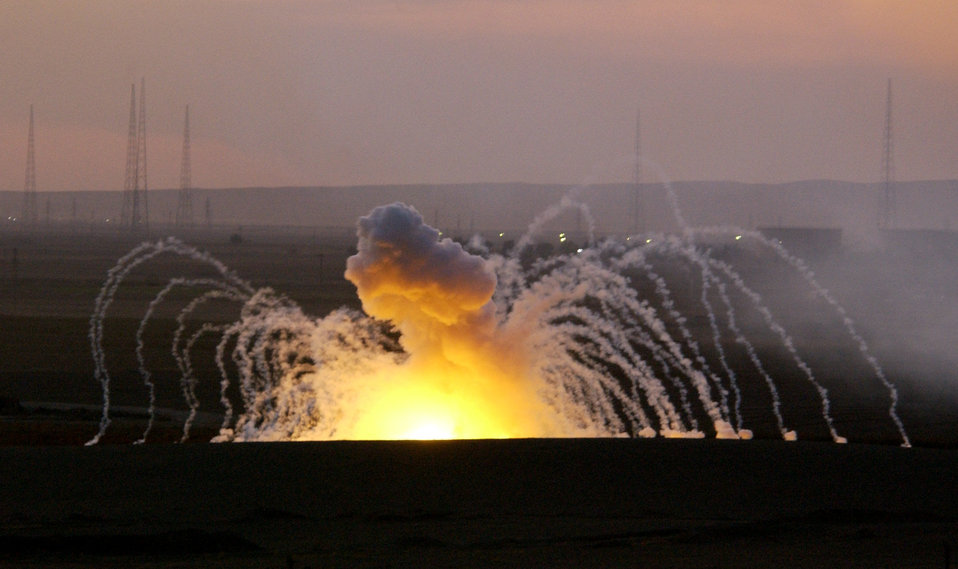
Boom!

KIRKUK, Iraq -- A strategic target here is hit by a U.S. incendiary mortar round as part of Operation Ivy Cyclone. The operation is designed to root out and crush insurgents in Iraq.